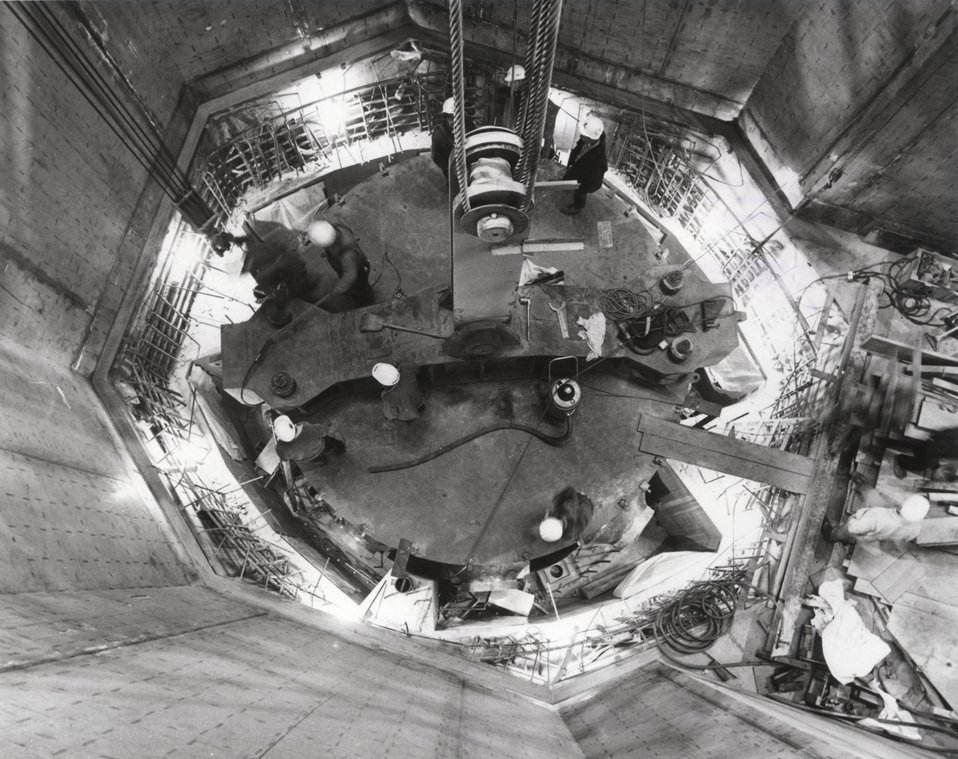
Interior of the containment structure of Portland General Electric Co.'s Trojan Nuclear Power Plant on the Columbia River near Prescott, Oregon. Circa 1974.